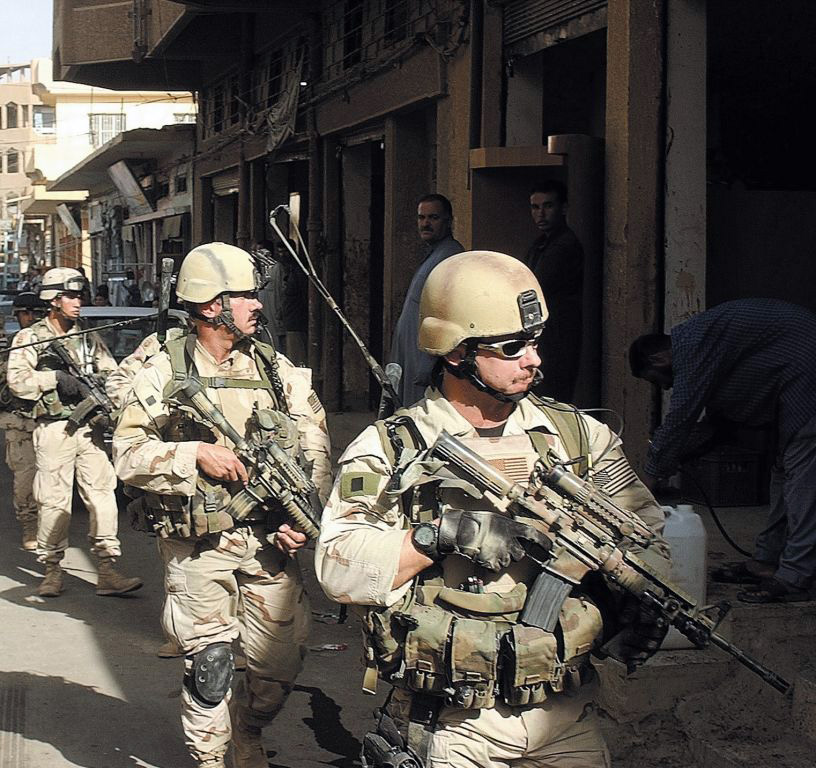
Enlisted TACP control close air support

Enlisted tactical air controllers from the 14th Air Support Operations Squadron accompany the Army's 82nd Airborne Division on a foot patrol through an arms market in Iraq.